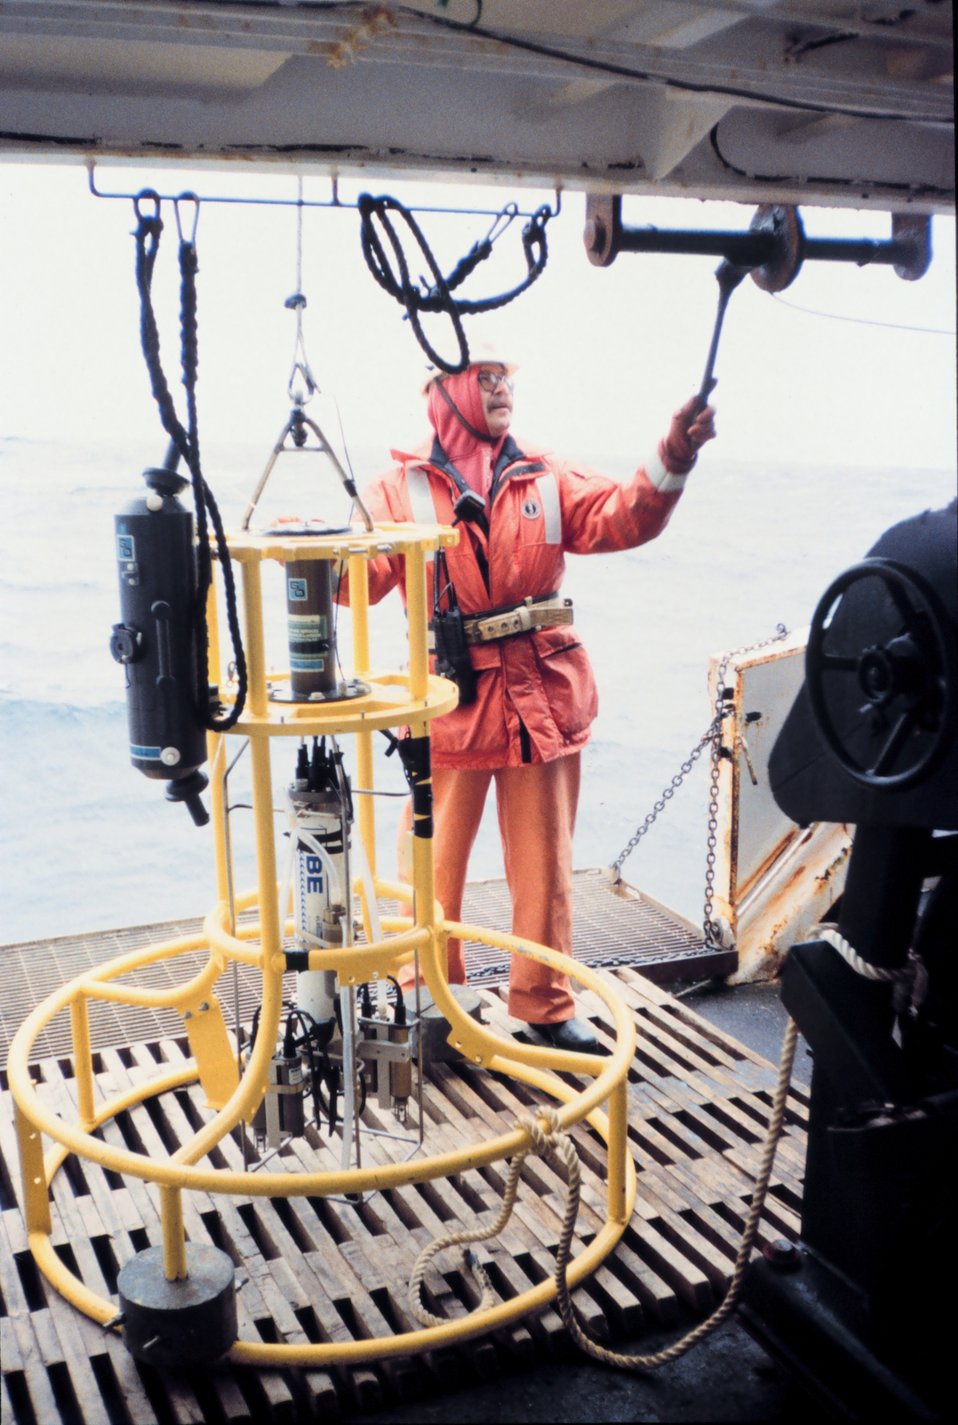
Conductivity-Temperature-Depth measuring instrument on deck ready for deployment.